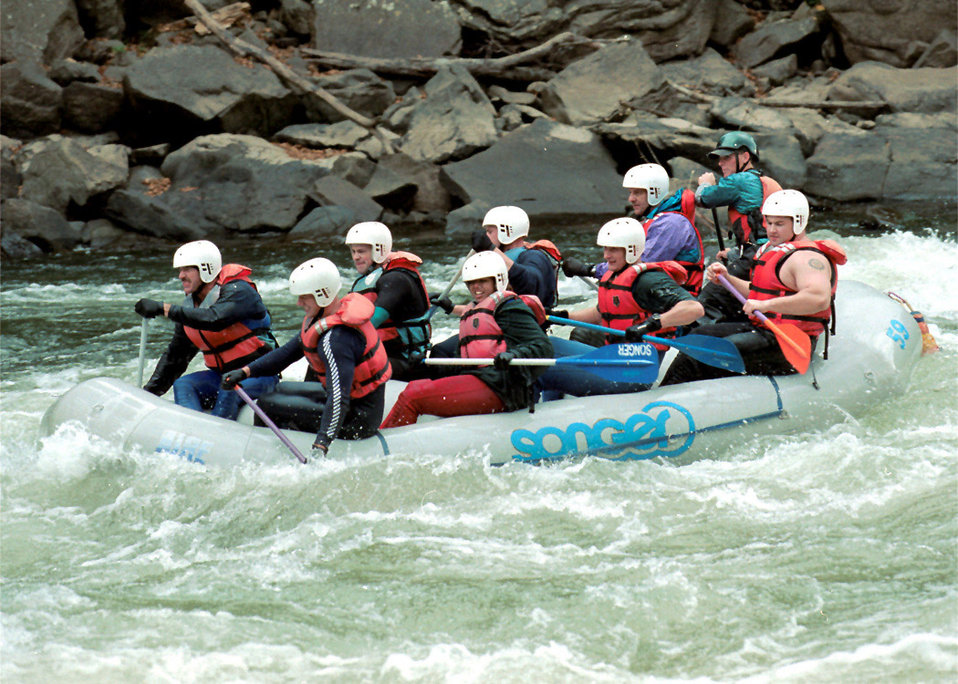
Wilderness Challenge

FAYETTEVILLE, W. Va. -- The team from F.E. Warren Air Force Base, Wyo., traverses the whitewater rapids during a 14-mile trek down the New River during a two-day military Wilderness Challenge competition here.